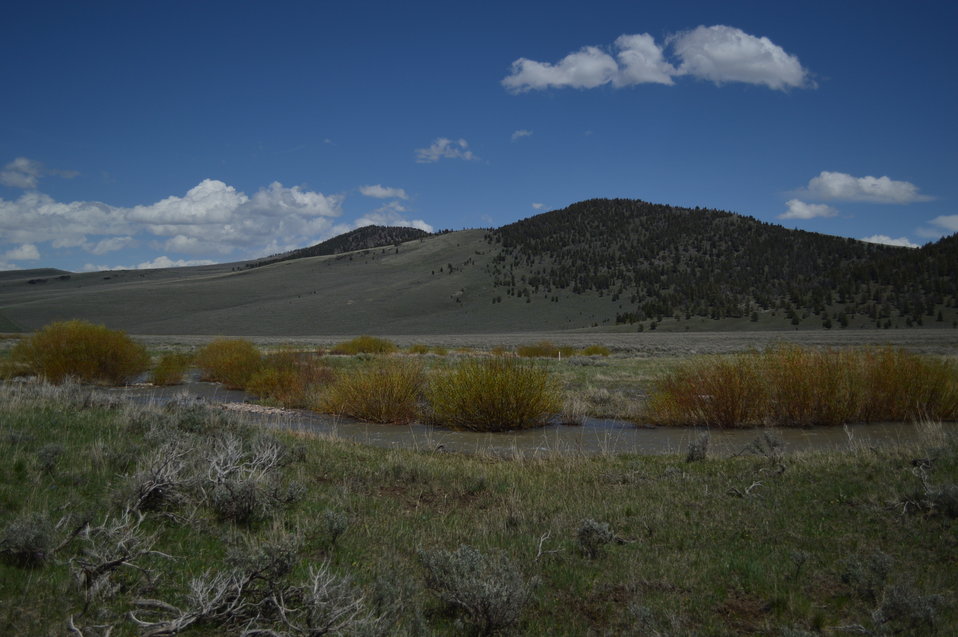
Regional Leadership Visit to Montana 2014